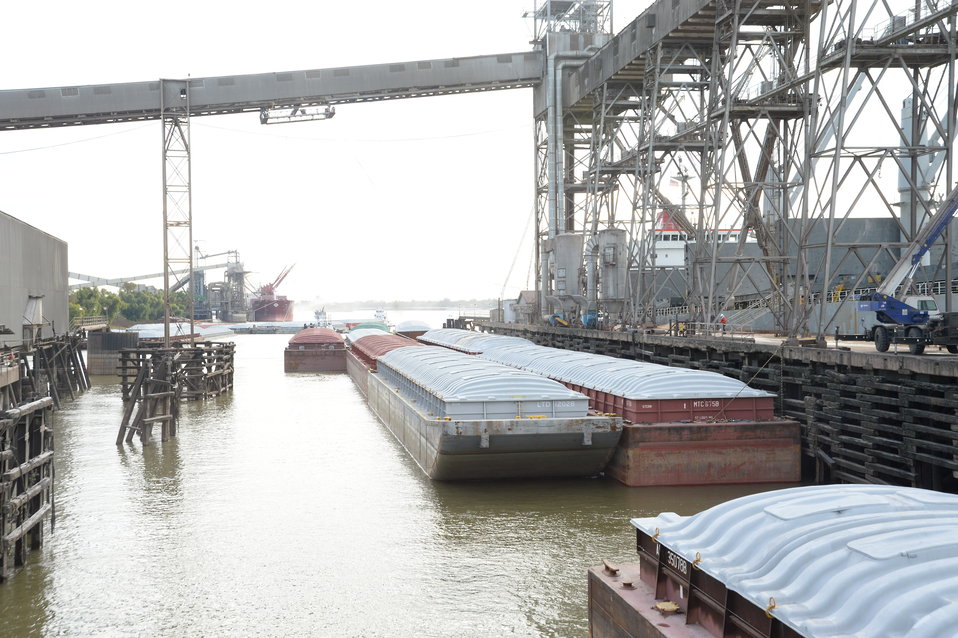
Barges are lined up waiting to transfer grain to storage facilities near the Port of New Orleans in New Orleans, LA on Tuesday, Nov. 19, 2013.